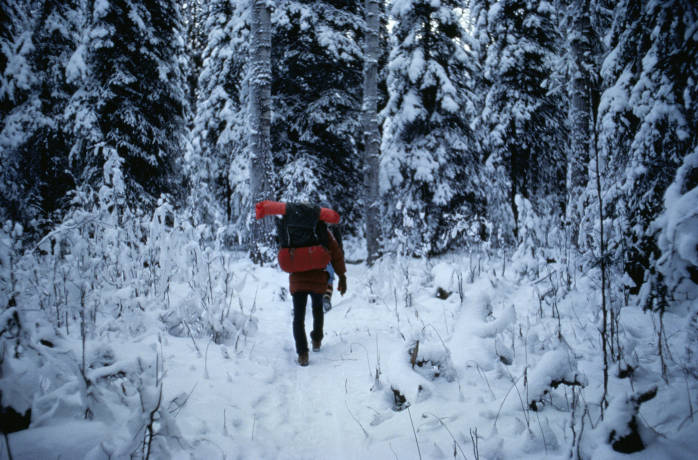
Winter backpacking at Kenai National Wildlife Refuge in Alaska.